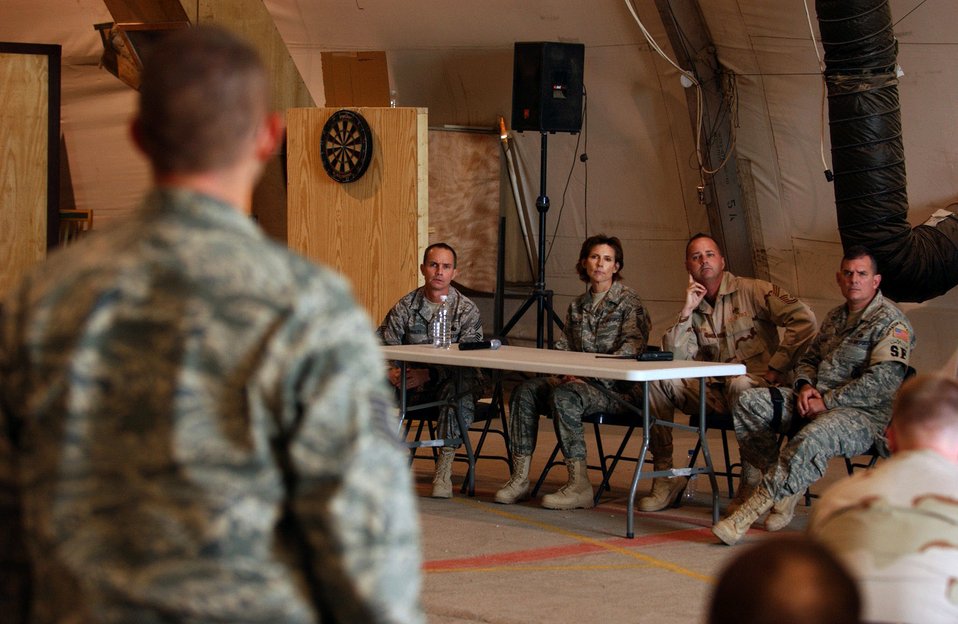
Senior NCOs mentor junior sergeants in Iraq

Tech. Sgt. Anthony Reitz asks a question during an open forum with senior enlisted Airmen Dec. 8 at Ali Base, Iraq. The Top 3 Council hosted a Senior NCO Mentorship Seminar for mid-tier enlisted Airmen. Sergeant Reitz is assigned to the 407th Expeditionary Civil Engineer Squadron and is deployed from Little Rock Air Force Base, Ark.